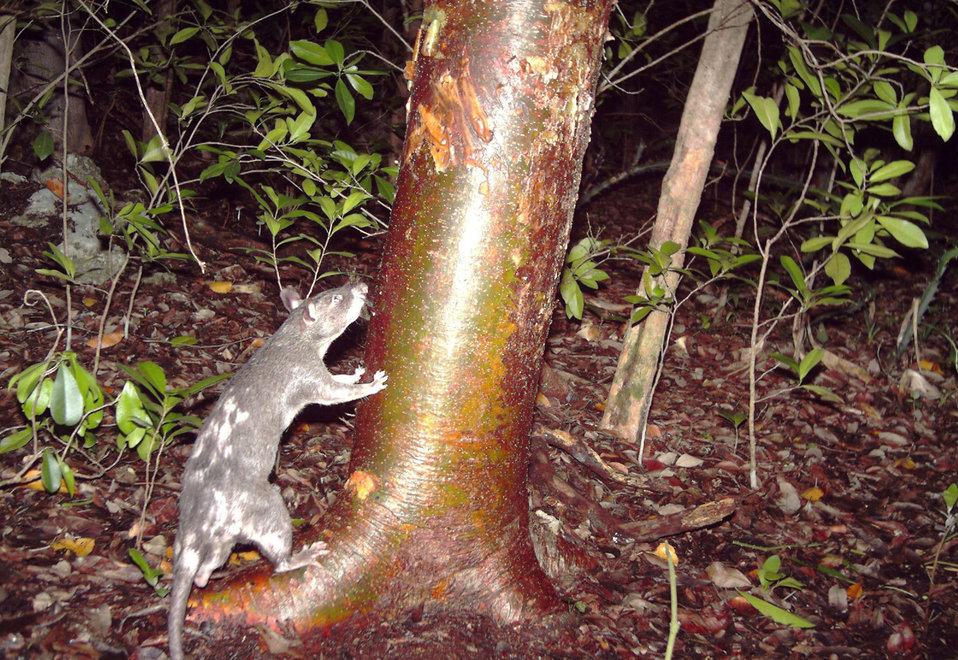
Growing up to 3 feet in length and weighing as much as 9 pounds, invasive Gambian giant pouched rats were first brought to the U.S. as part of the pet trade. The U.S. Department of Agriculture's (USDA) Animal Plant Health and Inspection Service (APHIS) Wildlife Services (WS) works with Florida State officials to trap and remove these unwanted invaders where they have been intentionally and accidentally released on the Florida Keys.